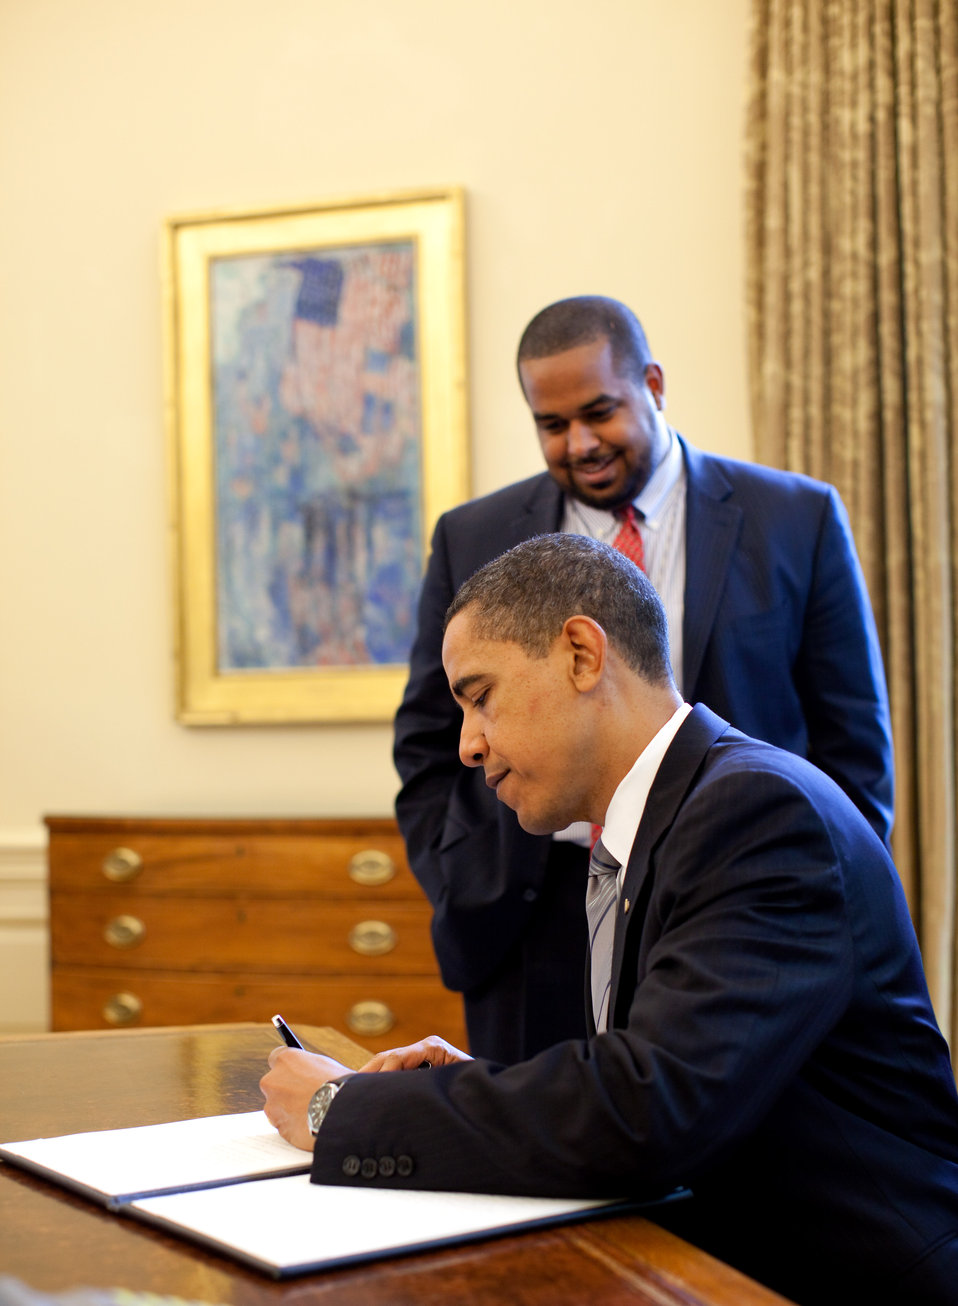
President Barack Obama signs the proclamation marking the National Day of Prayer in the Oval Office of the White House May 7, 2009. Looking on is Joshua DuBois, Director of the White House Office for Faith-Based and Neighborhood Partnerships.